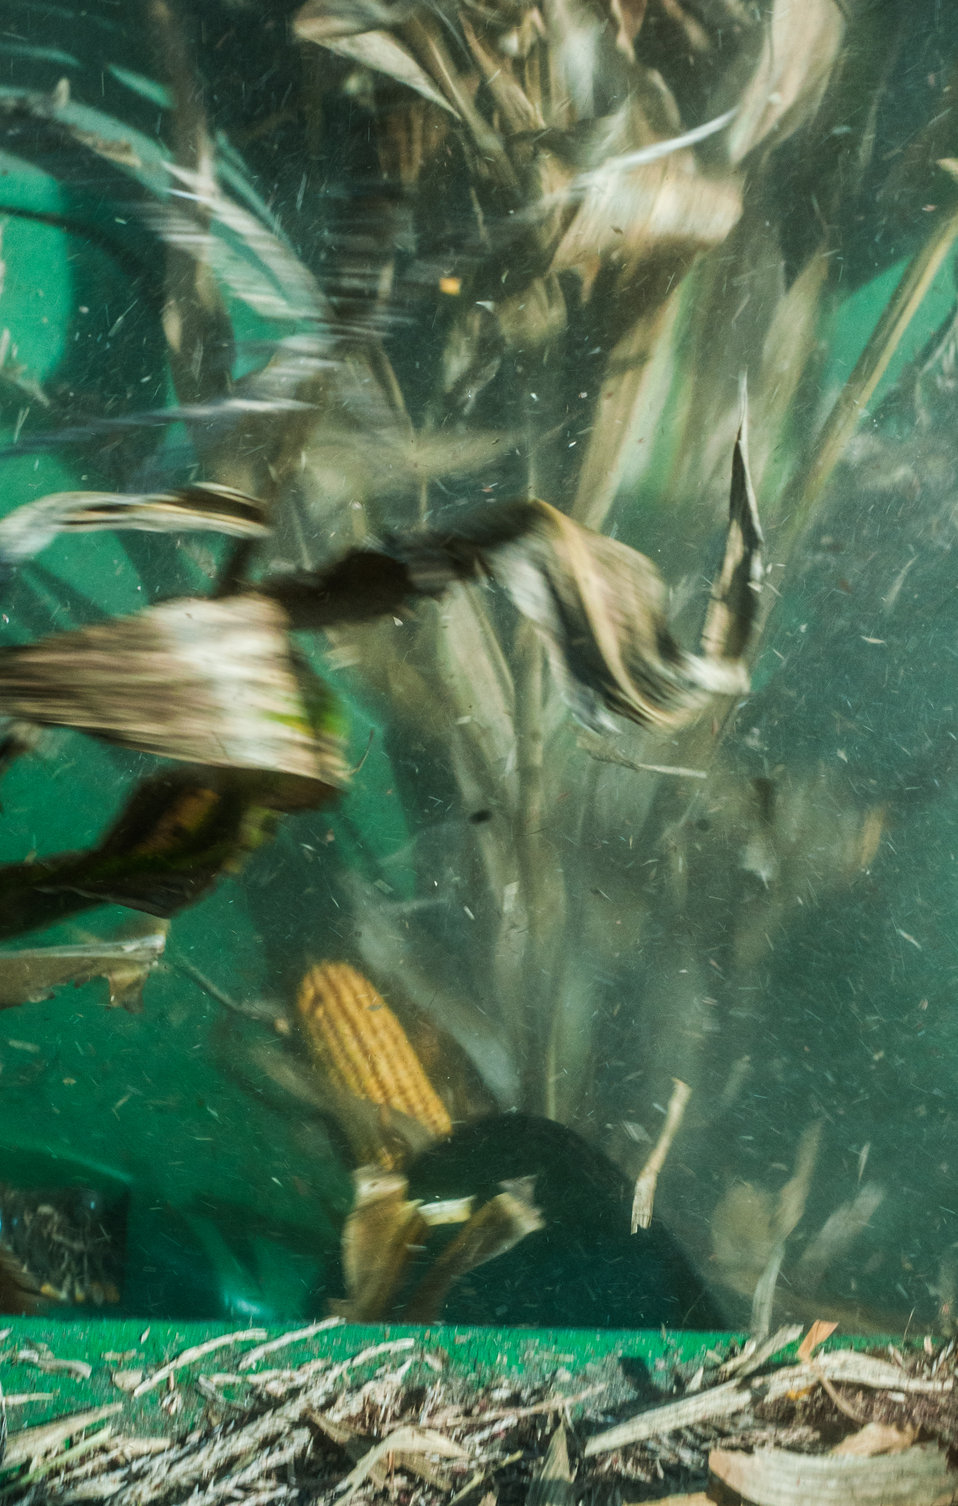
The view out of the operators cab of a corn harvester as corn stalks are cut and the kernels and cornstalks separated during the harvest on Friday, Sept. 20, 2013 harvest, at the John N. Mills & Sons farm; a family owned business located in the Hanover and King William Counties of Virginia. Pleasant Level Farm was the original farm and a Land Grant from King George III of England to Nicholas Mills in 1725. The original acreage has never left the Mills family name and continues to be farmed by the family. Now the farm covers 5,744 acres that produce corn, wheat, soybeans, barley, hay and timber, and pastures a large herd of beef cattle. They have been using conservation and stewardship practices since the 1960s. Some of the efficient practices include no-till planting methods and cover crops to reduce soil erosion and prevent the leaching of nutrients into ground water, as well as livestock stream exclusion. The farm has several conservation easements that aids in the preservation and restoration of wetlands and waterways. For information about the U.S. Department of Agriculture (USDA), please go to www.usda.gov.